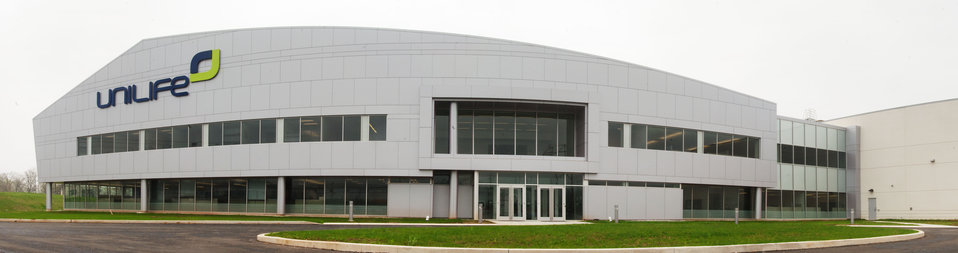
(Virtual panorama, best viewed with largest download) Unilife is a medical device company focused on the design, development, manufacture and supply of a proprietary range of retractable syringes on Monday, April 20, 2011 in York, PA. In partnership with Sanofi-aventis, Mikron Group, and MDMA, U.S. Department of Agriculture Rural Development was able to guarantee $18,000,000 through its Business and Industry Guaranteed Loan Program to construct a custom-built, global headquarters and commercial production facility in York, Pennsylvania. The 165,000 sq. ft. facility was completed in late 2010 and can accommodate future growth as well as the Company’s projected demand from pharmaceutical and healthcare companies for its proprietary range of Unifill ready-to-fill (prefilled) and Unitract general purpose safety syringes. Stage one of the facility is designed to accommodate the production of up to 400 million Unilife syringes per year and to meet stringent pharmaceutical standards for primary drug containers. Adjacent to the manufacturing facility is Unilife’s global headquarters (grey exterior) that support administrative, marketing, new product development, quality laboratories and other operational functions. Unilife, which first arrived in Pennsylvania in 2006. The company has doubled its employees for the past three years. There are approximately 150 employees, and they expect to double the number by 2015.